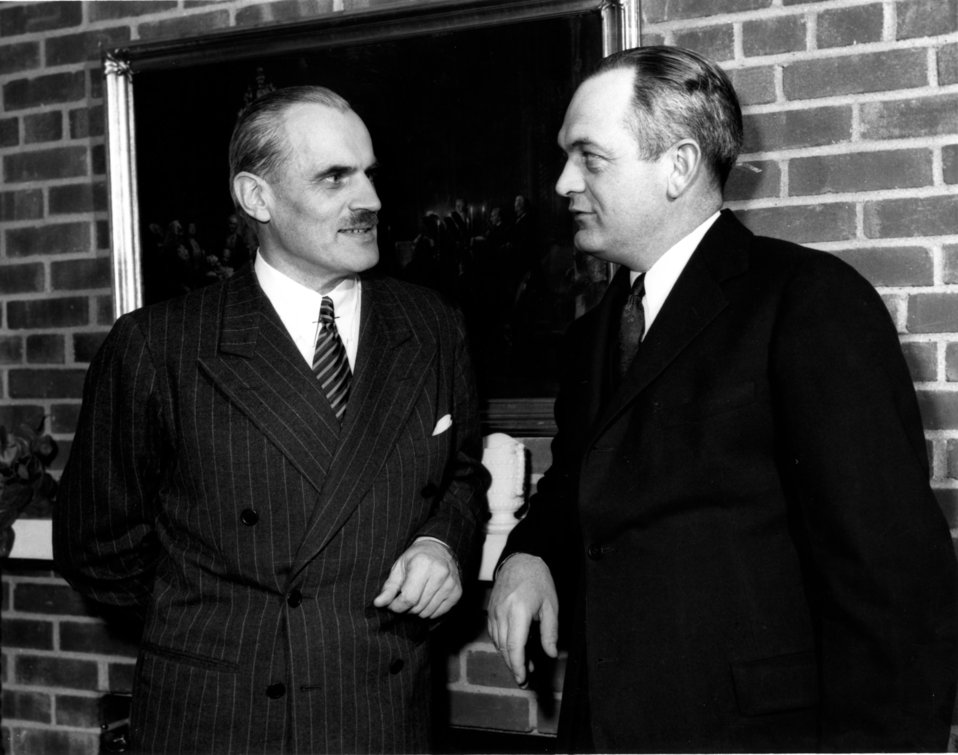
Notable persons at Oak Ridge